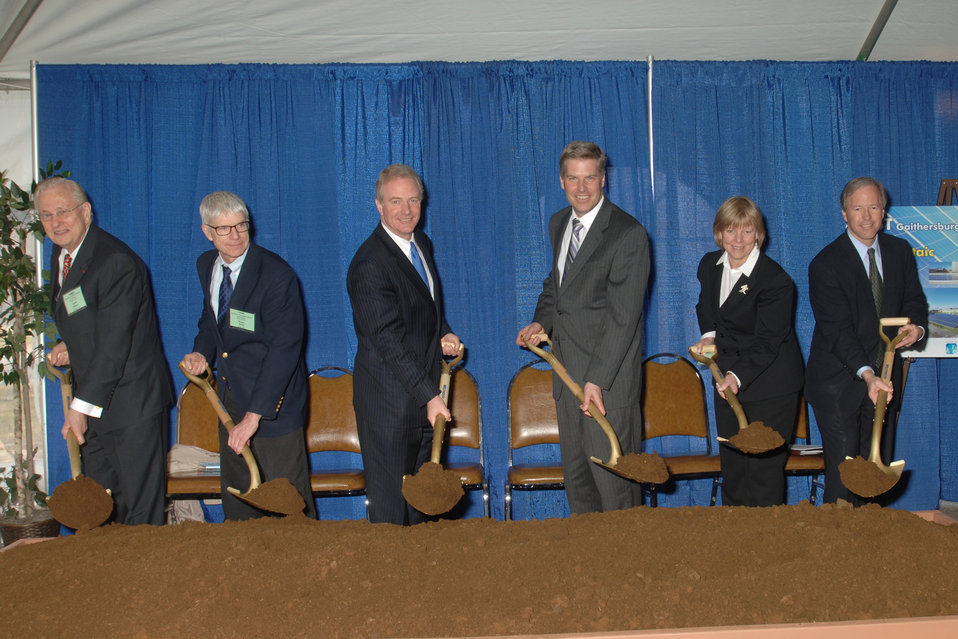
Net-Zero House

L-R: Former NIST Director Arden Bement; U.S. Department of Energy Acting Assistant Secretary and Principal Deputy Assistant Secretary, Office of Energy Efficiency and Renewable Energy Henry Kelly, U.S. Representative Chris Van Hollen; Under Secretary of Commerce for Standards and Technology Pat Gallagher; Montgomery County Council Member Nancy Floreen; and Montgomery County Council Member Phil Andrews break ground for three new facilities at the NIST Gaithersburg campus.